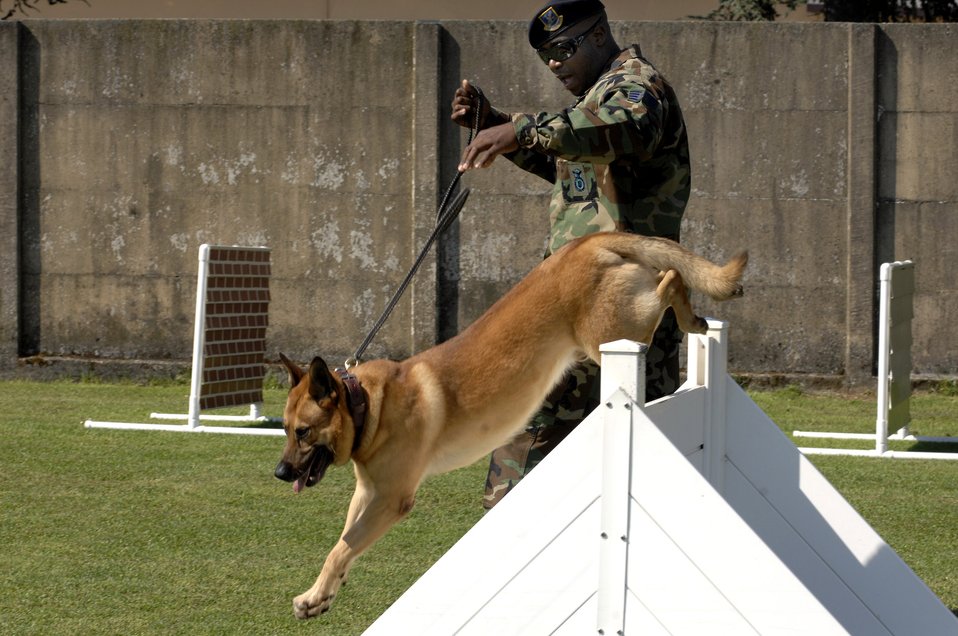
Up and over

Staff Sgt. Charleston Calhoun takes his dog Arco through the obstacle course May 14 at Aviano Air Base, Italy. Dog handlers use the course as a part of physical training for their military working dogs.